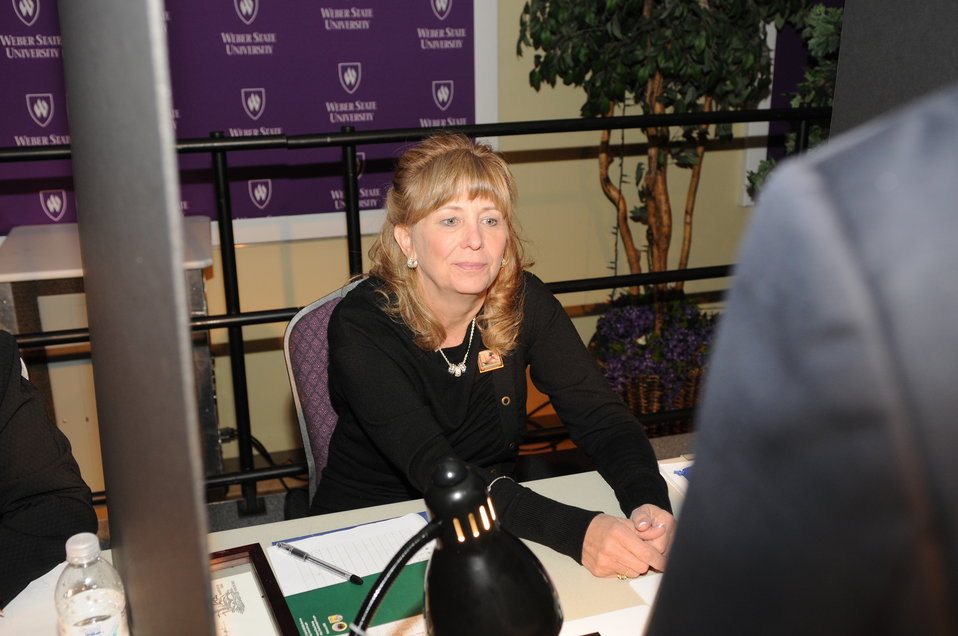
Judging

The U.S. Fish & Wildlife Service sponsored the 2012 Federal Duck Stamp Art Contest September 28 and 29 in Ogden, Utah, at Weber State University. A panel of five judges was responsible for choosing the art work used to design the 2013-2014 Migratory Bird Hunting and Conservation Stamp.